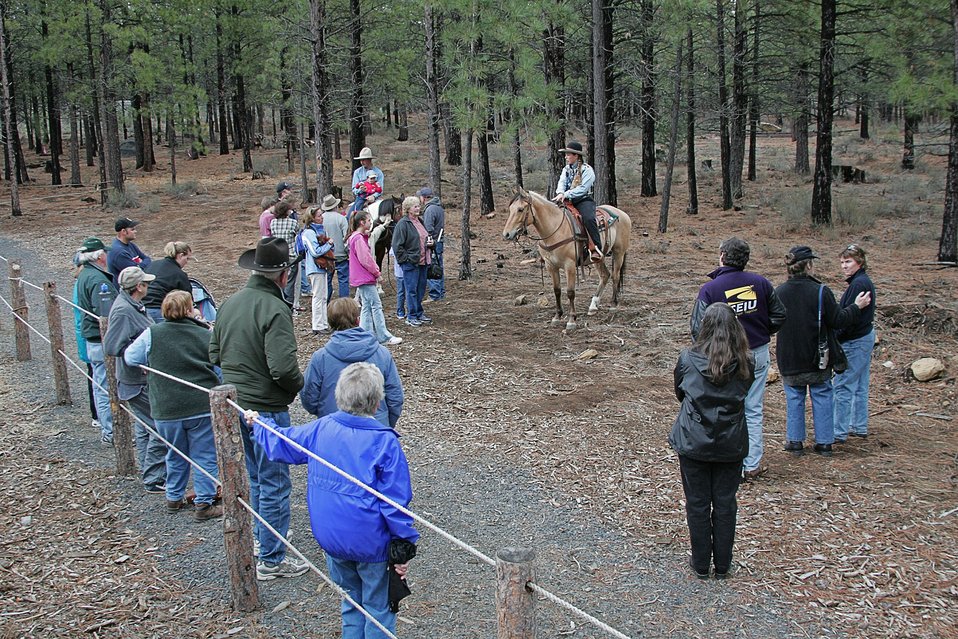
Horse Trainers Rich and Kitty Lauman talk with High Desert Museum visitors and potential adopters about working with wild horses Spirit and Sage.